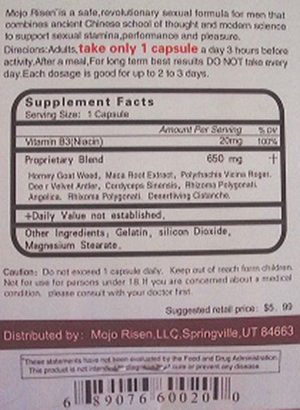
Mojo Risen Supplement Facts